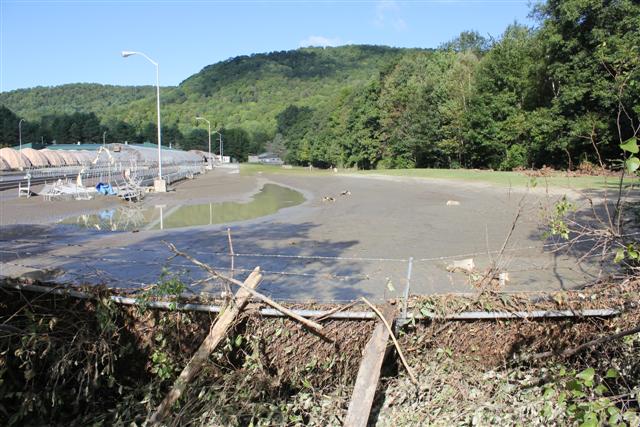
Damage and Flooding at White River National Fish Hatchery

Post Hurricane Irene damage and flooding at the White River National Fish Hatchery in Bethel, VT. Sunday, August 28, 2011.